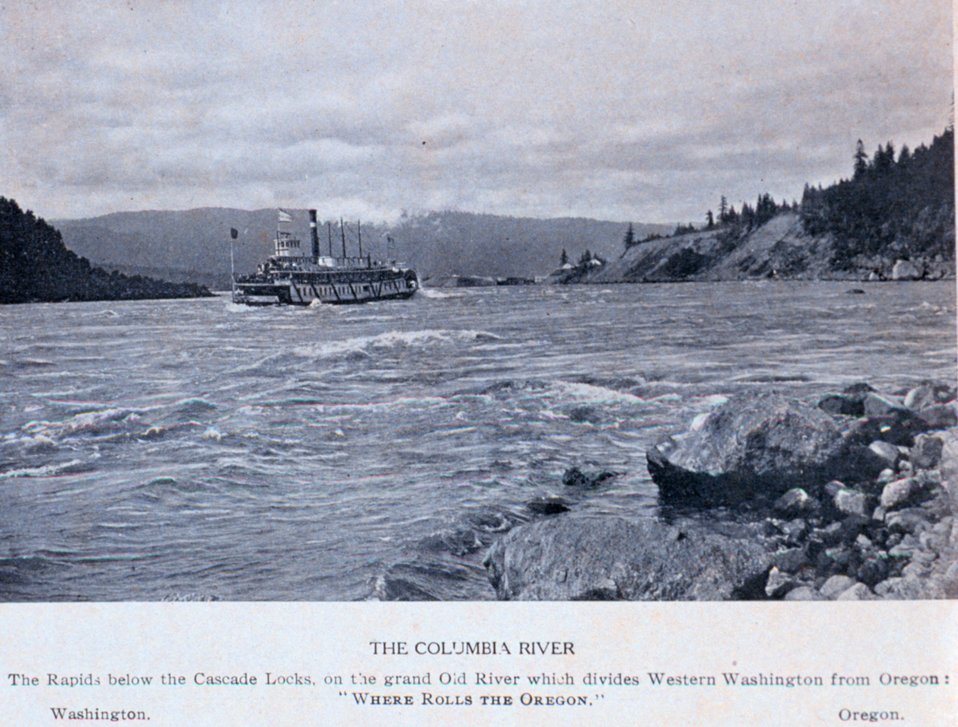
'The Columbia River'. A steamboat on The Rapids below the Cascade Locks. In: 'Puget Sound and Western Washington Cities-Towns Scenery', by Robert A. Reid, Robert A. Reid Publisher, Seattle, 1912. P. 192.